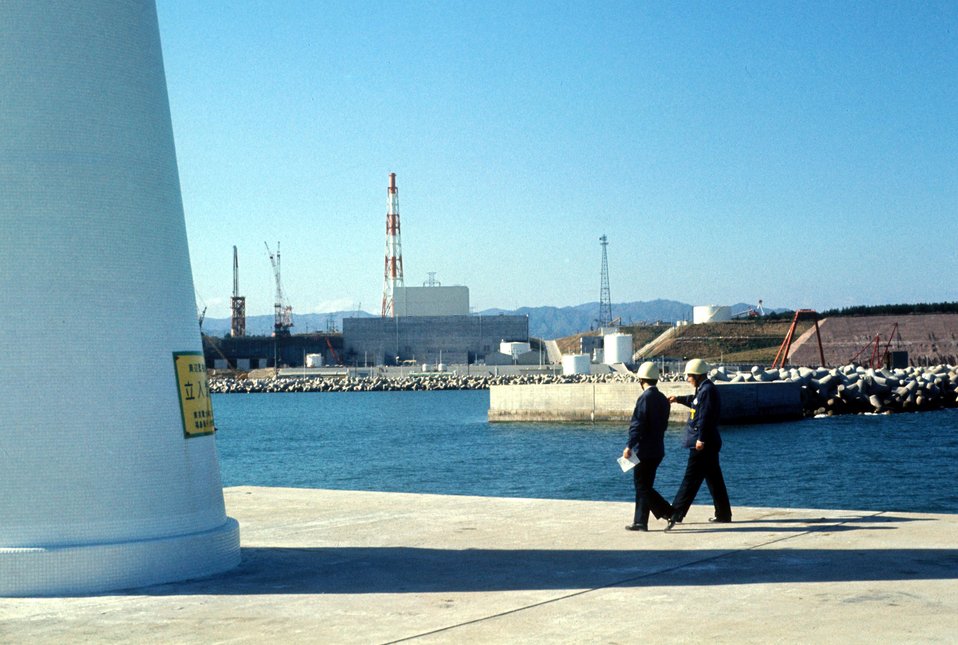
Tepco Nuclear Plant, Fukushina, Japan. c. 1970